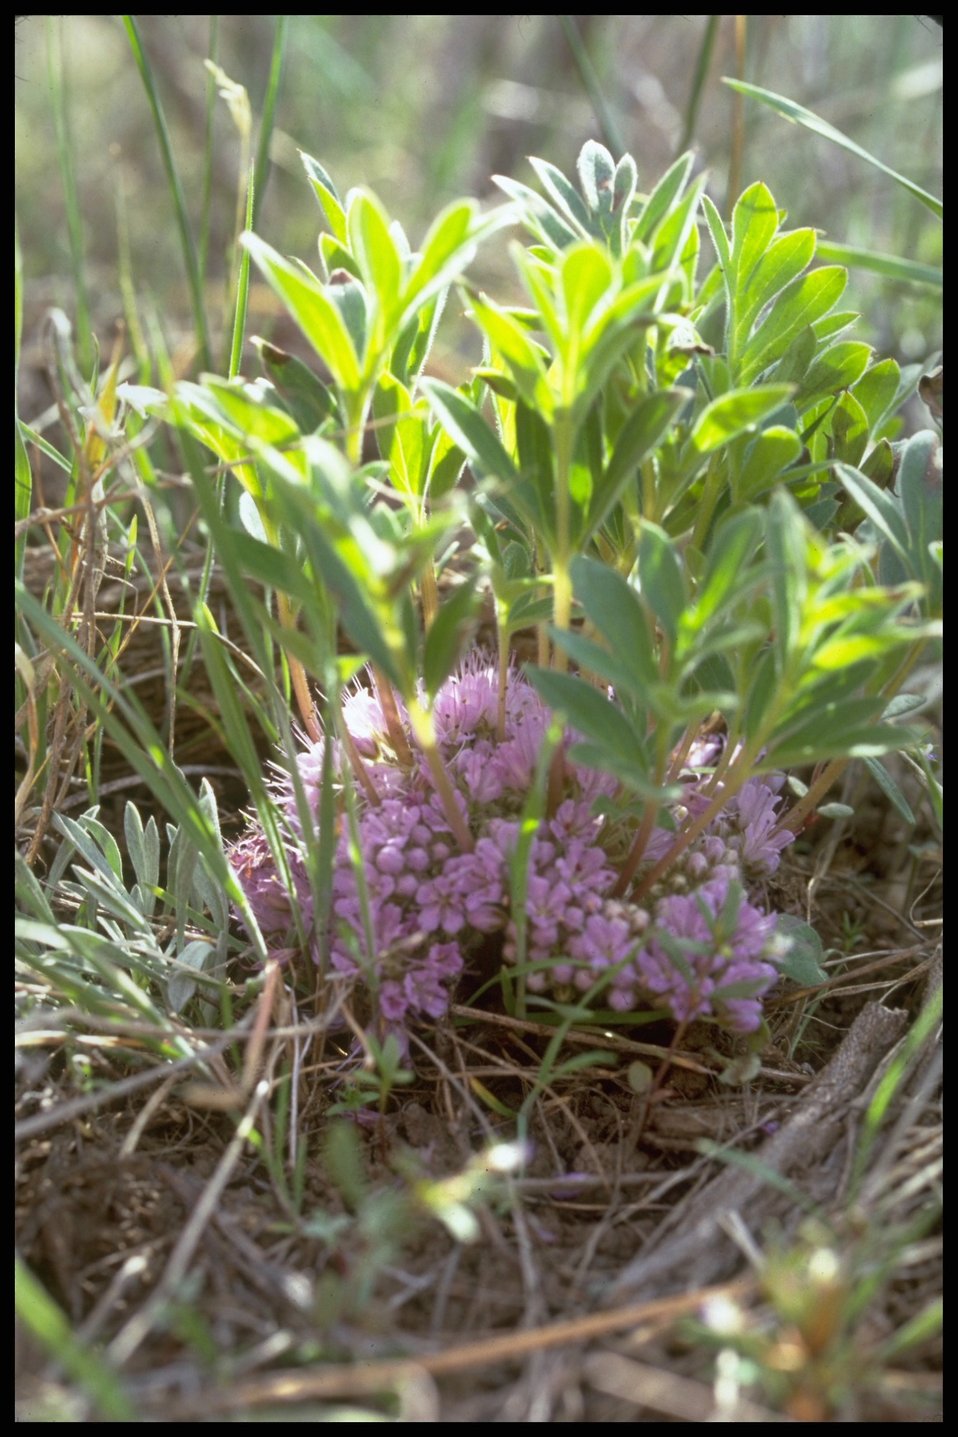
Medium shot of Water Leaf wildflower habitat, Lakeview District.